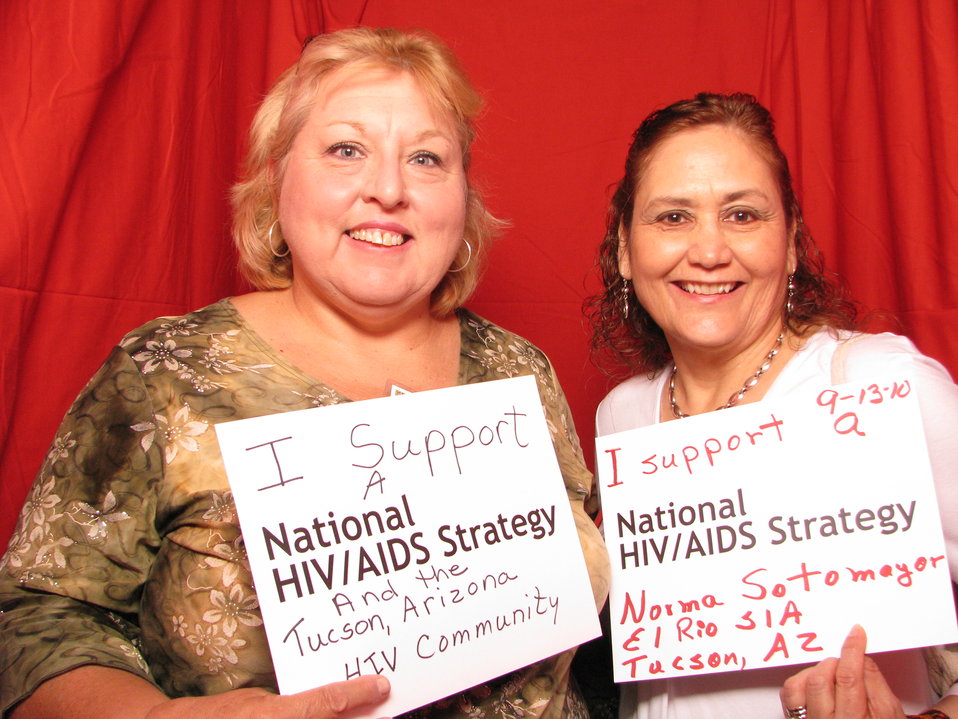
I support a National HIV/AIDS Strategy and the Tucson, Arizona HIV Community. I support a National HIV/AIDS Strategy.

From the AIDS.gov photo booth at the U.S. Conference on AIDS, September 2010 (Orlando, FL).